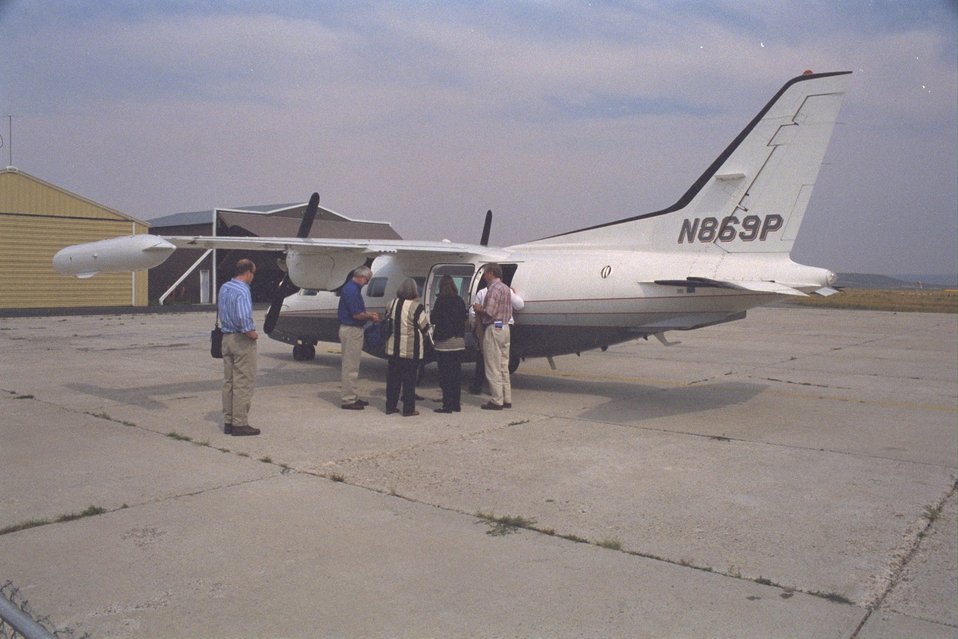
Secretarial delegation leaves Brnes airport.